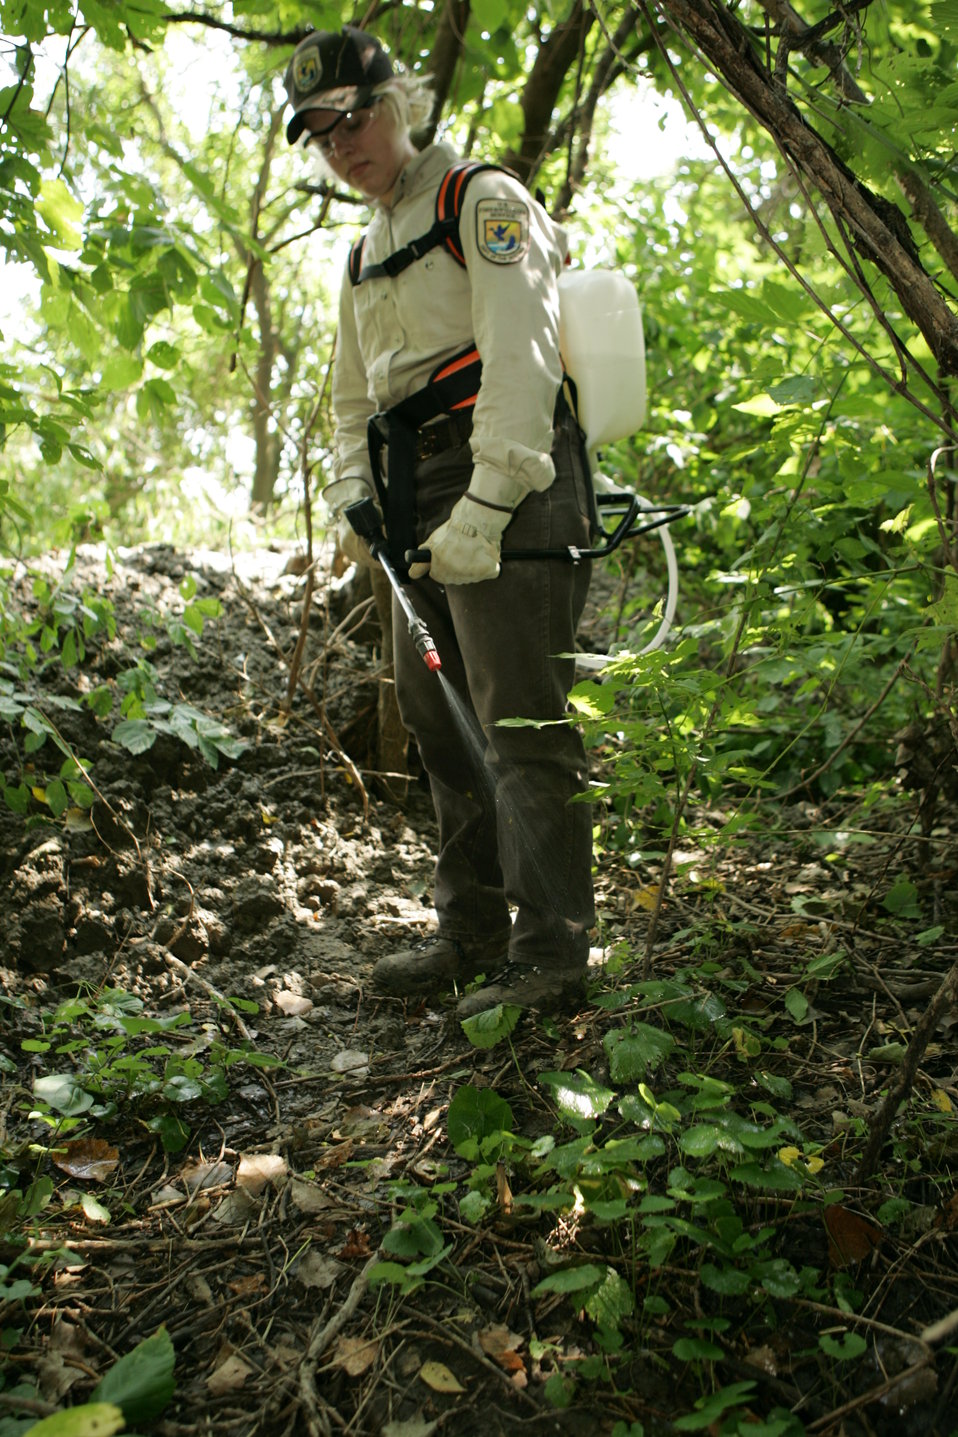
Spraying Garlic Mustard at Big Muddy

A U.S. Fish and Wildlife Service employee sprays invasive garlic mustard at Big Muddy National Fish & Wildlife Refuge in Missouri.